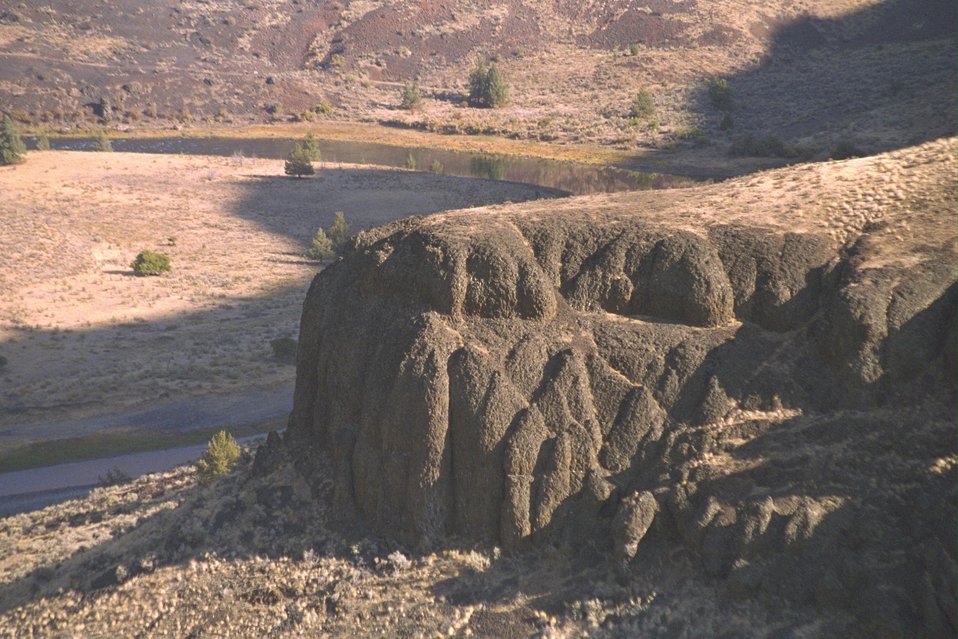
Lava cliffs with the John Day River in the background.